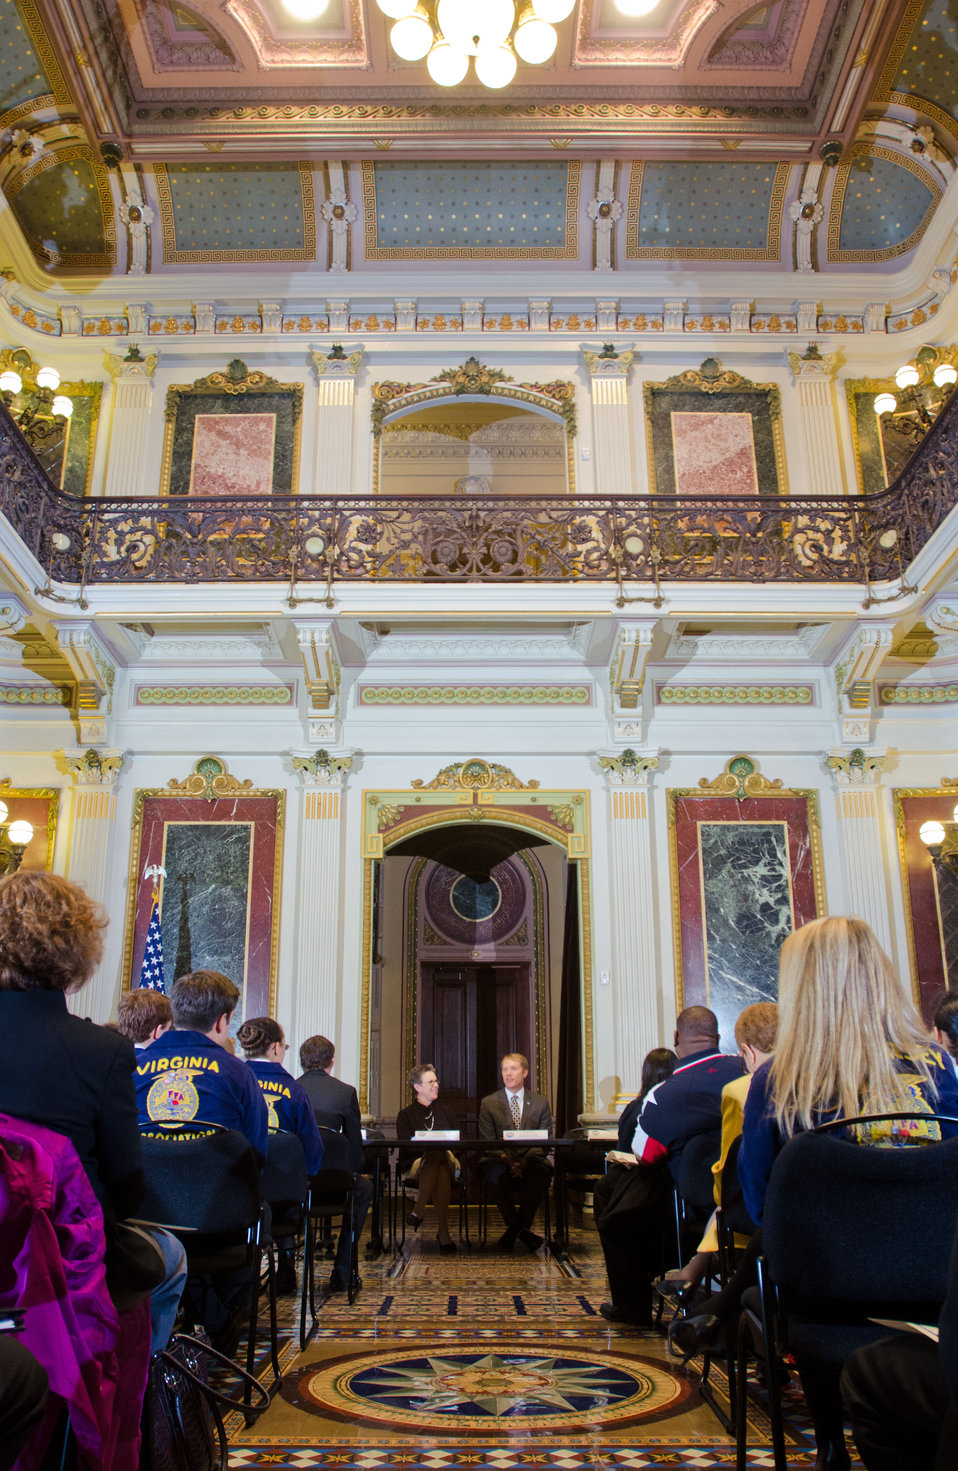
Agriculture Under Secretary for Research, Education and Economics (REE) Catherine Wotecki and Education Deputy Assistant Secretary John White moderate the Youth Champions of Change panel, in the Indian Treaty Room of the Executive Office Building in Washington, D.C. on Tuesday, Oct. 9, 2012. The Champions of Change program was created to honor ordinary Americans doing great work in their communities. Each week, a different sector is highlighted and groups of Champions, ranging from educators, entrepreneurs and community leaders, are recognized for the work they are doing to serve and strengthen their communities.